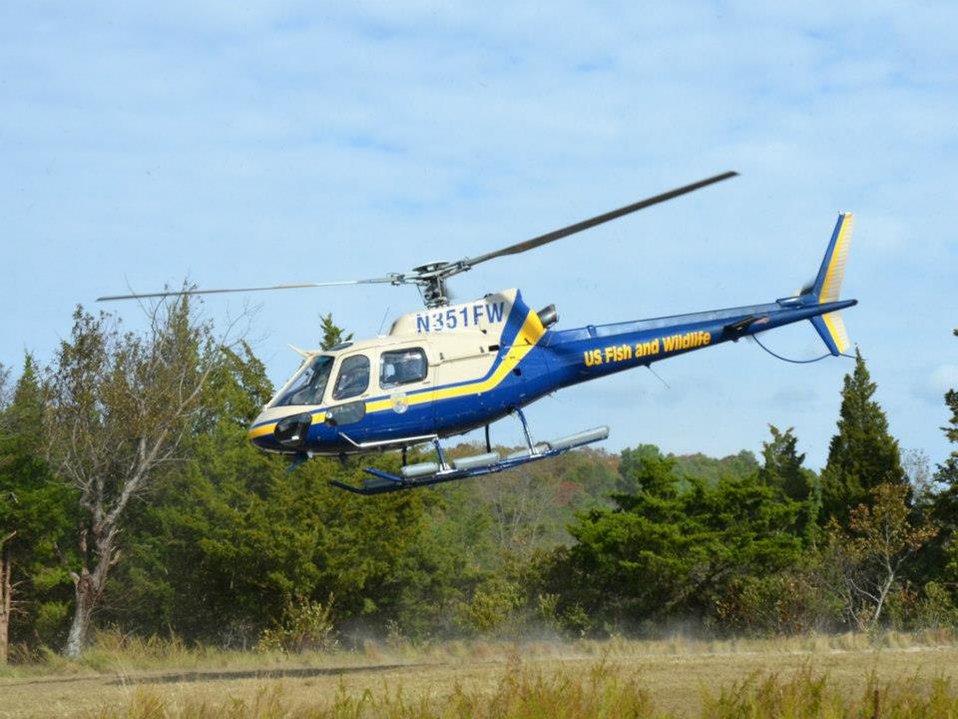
U.S. Fish and Wildlife Service helicopter takes off

Service staff are taking to the air to assess damages caused by Hurricane Sandy.